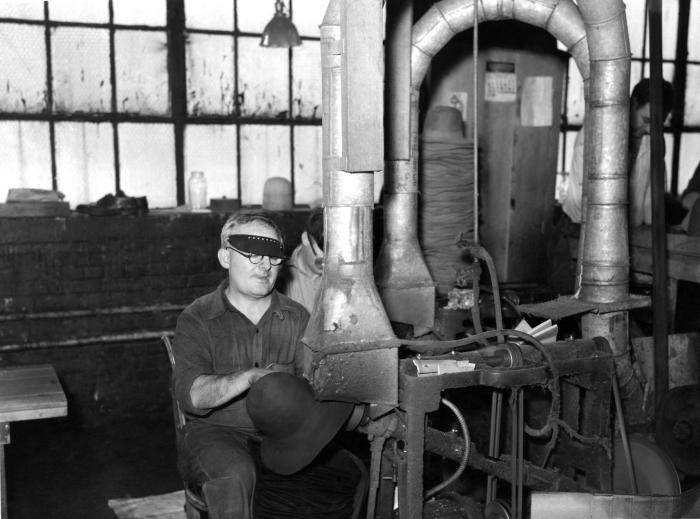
Provided by the Center for Disease Control's (CDC), National Institute for Occupational Safety and Health (NIOSH), this historic image, shot inside a Connecticut hat manufacturing plant, depicted a fur hat factory worker shaping fur into a hat. This worker was not wearing a filtered breathing mask, which in the confines of a factory that used mercury in its fur processing, would now be required. Working with 'carroted' fur, fixed with mercury nitrate, workers could be exposed to airborne mercury, especially when using steam, thereby, suffering the detrimental neurologic consequences from its inhalation. Using steam facilitated the airborne dissemination of this neurotoxic element.